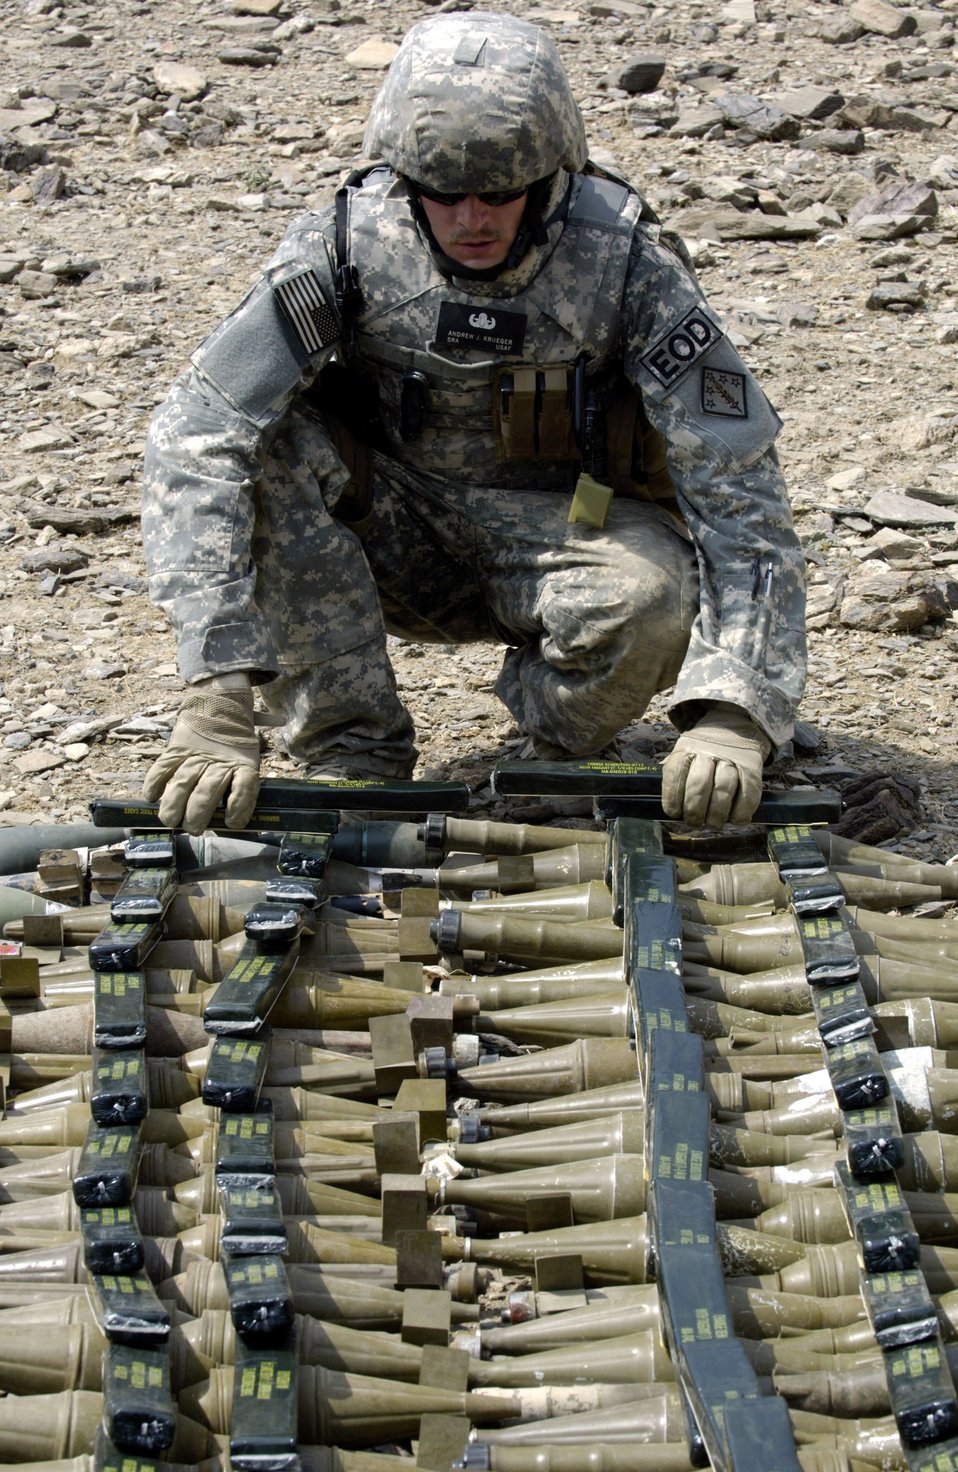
Small rewards program results in big explosion

An Air Force explosive ordnance disposal specialist from Forward Operating Base Mehtar Lam, Afghanistan, readies ammunition for a controlled detonation Sept. 1. Nearly 900 pounds of small arms ammunition, rocket-propelled grenades and mortars were turned in by provincial citizens.